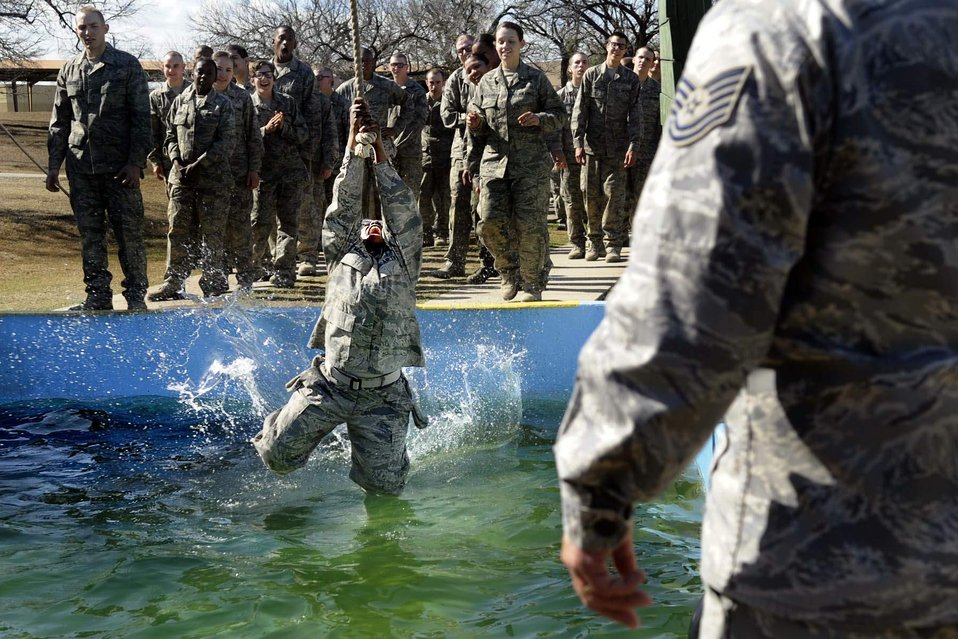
Basic training

A basic trainee swings across a cold water pool as her knees get wet at the obstacle course. A military training instructor stands on the far side of the pool to assist. A recently expanded Air Force Basic Military Training program focuses on a ?warrior first? philosophy.